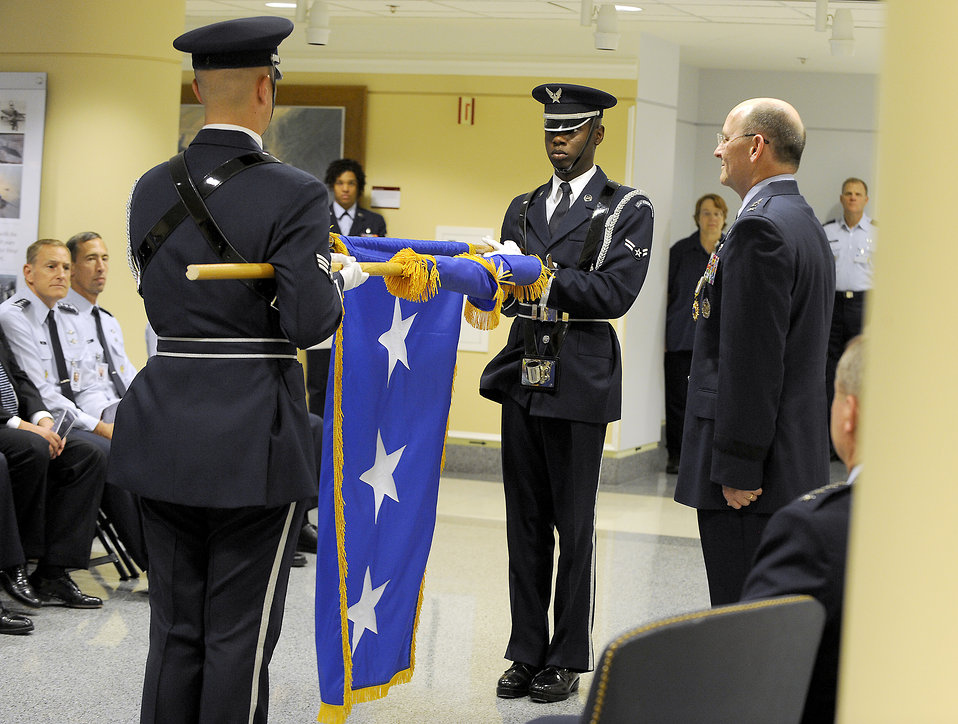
AFRC commander promoted

Newly-promoted Lt. Gen. James Jackson watches the U.S. Air Force Honor Guard unfurl his new ceremonial flag during a Pentagon ceremony on Aug. 16, 2012. Jackson is the commander of Air Force Reserve Command and chief of the Air Force Reserve.